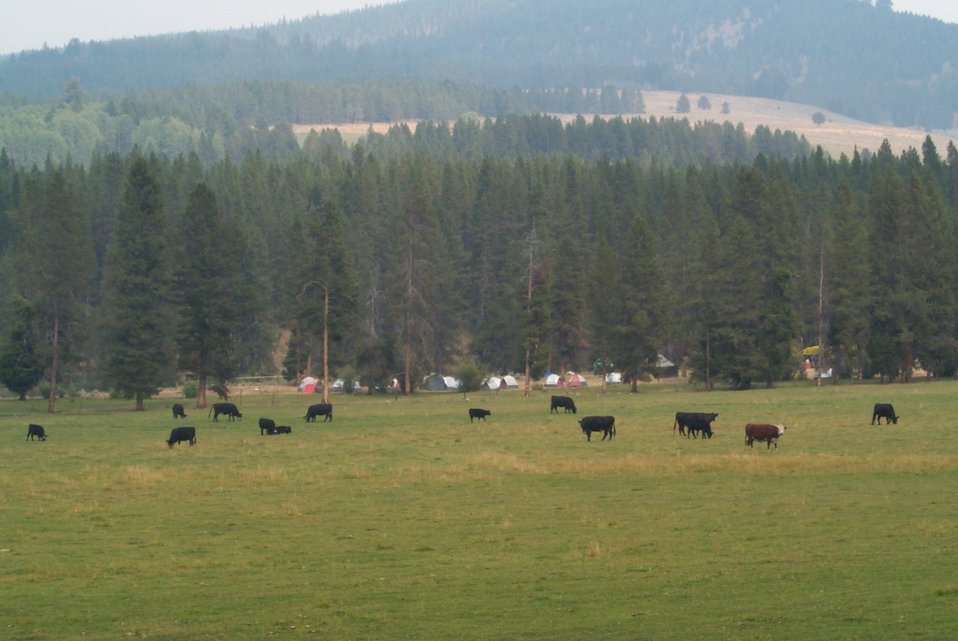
Camp Fire Clearwater Fire Salmon Field Office USRD Upper Snake River District